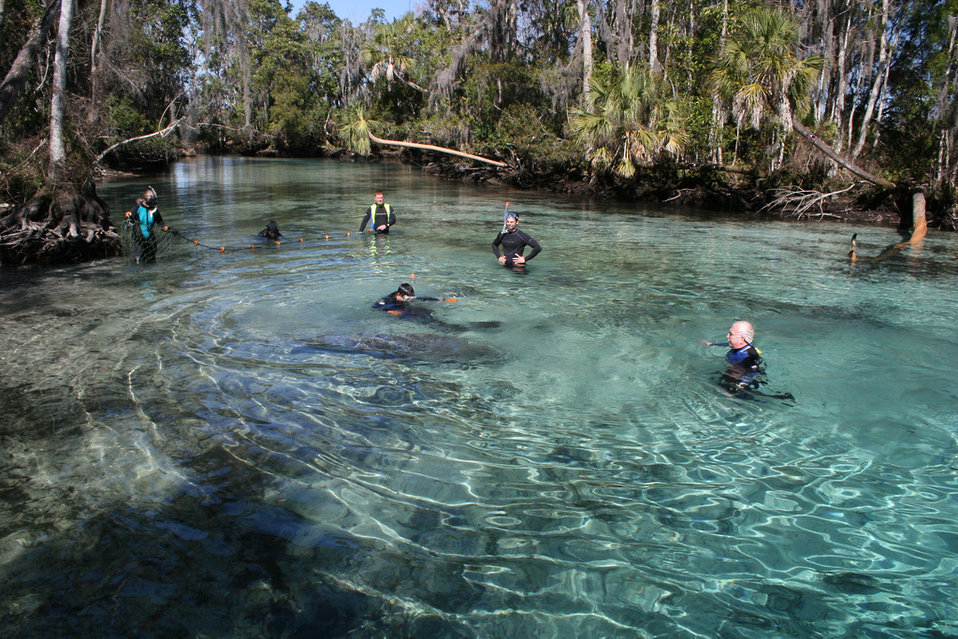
Endangered Florida manatee (Trichechus manatus), Crystal River National Wildlife Refuge

Photo credit: Stacy Dunn

The Crystal River National Wildlife Refuge, was established in 1983 specifically for the protection of the endangered West Indian Manatee. This unique refuge preserves the last unspoiled and undeveloped habitat in Kings Bay, which forms the headwaters of the Crystal River. The refuge preserves the warm water spring havens, which provide critical habitat for the manatee populations that migrate here each winter.